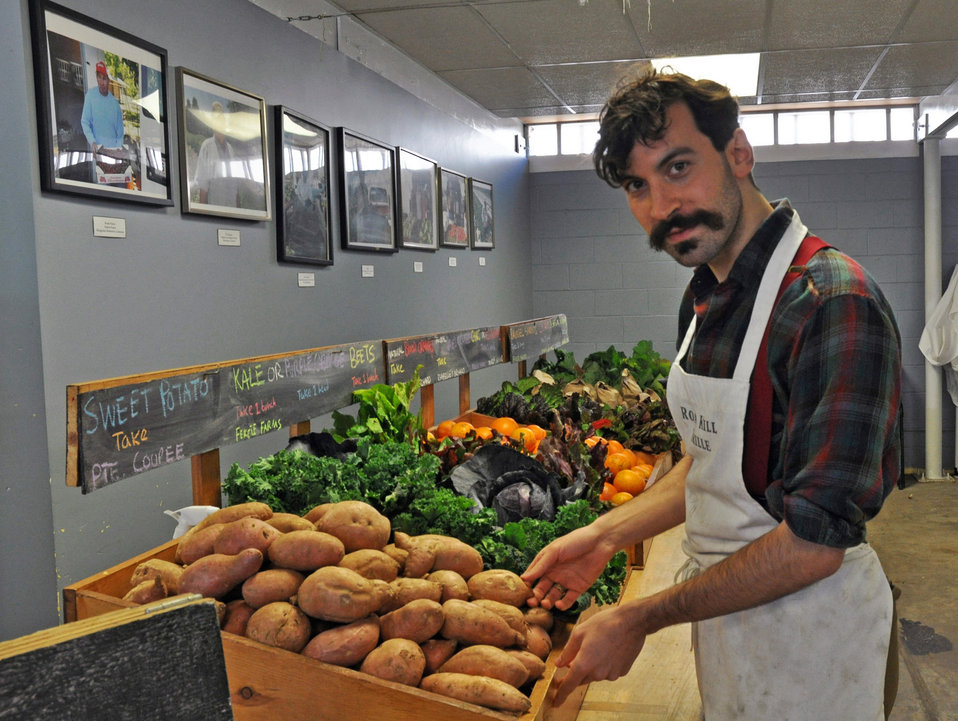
Nathan Cann volunteers at Hollygrove Market and Farm (HGMF) in exchange for a box of fresh produce valued at $25.00 in New Orleans, LA on Tuesday, Feb. 26, 2013.